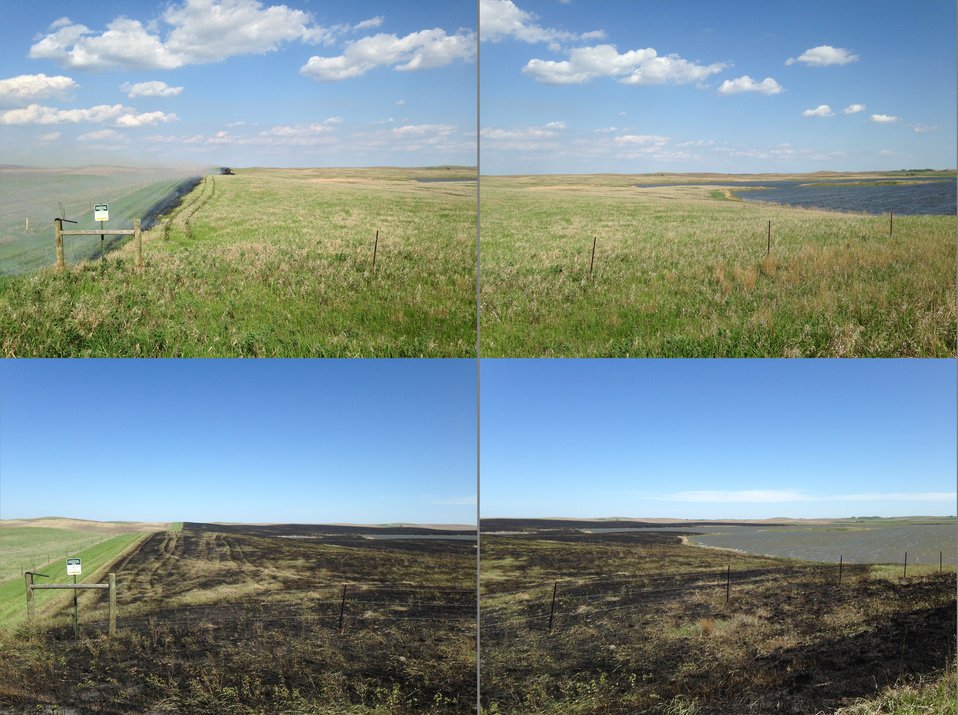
Knecht WPA Prescribed Fire: Before and After

In the Kulm Wetland Management District, areas of native prairie are burned later in the spring to set back non-native smooth brome grass. You can see from these photos that this prairie looks very green. However, there are several years of dead plant growth beneath the new green that easily carries a burn. Burning smooth brome between the 3-5 leaf stage takes the most toll on its stored energy reserves and gives native plants the best chance to re-establish.

After the next rain shower, this area will green up very quickly, and should even be able to be grazed in the same year if desired.

Prescribed fire is a management tool that is used to maintain the vigor of a prairie. As with grazing, native prairie plants adapted to the frequent fires that raged across the Great Plains. These fires were historically started by lightning strikes and burned many miles of uninterrupted prairie. Fire is one of the best management tools for weakening non-native species. It removes the accumulated litter layer, stimulates new plant growth, and can be used to prepare ground for restoration.